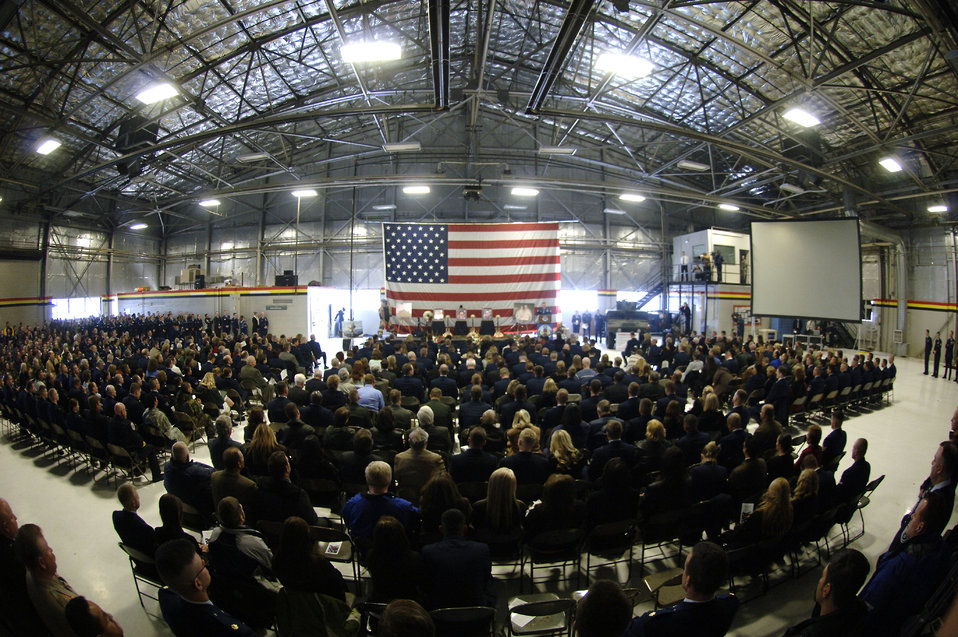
Memorial Service

Attendees filled a standing-room-only hangar at Hill Air Force Base, Utah, during a memorial service Jan. 12 honoring three Airmen killed in Iraq Jan. 7. The three Airmen were members of the 775th Civil Engineer Squadron Explosive Ordnance Disposal Flight. More than 1,000 people attended the memorial.